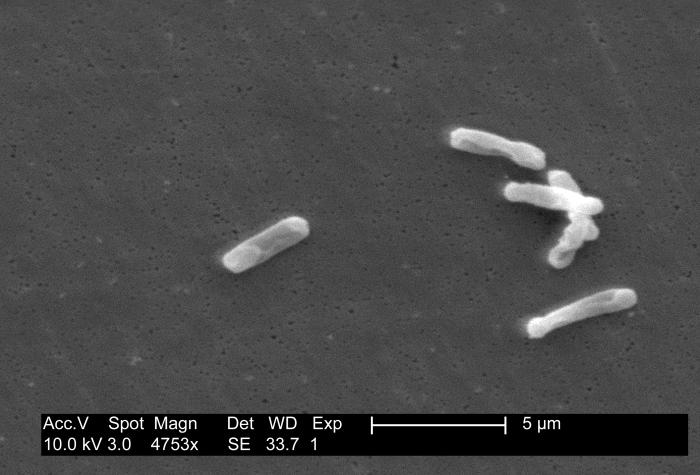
Obtained after an outbreak this micrograph depicts Gram-positive Clostridium difficile bacteria.